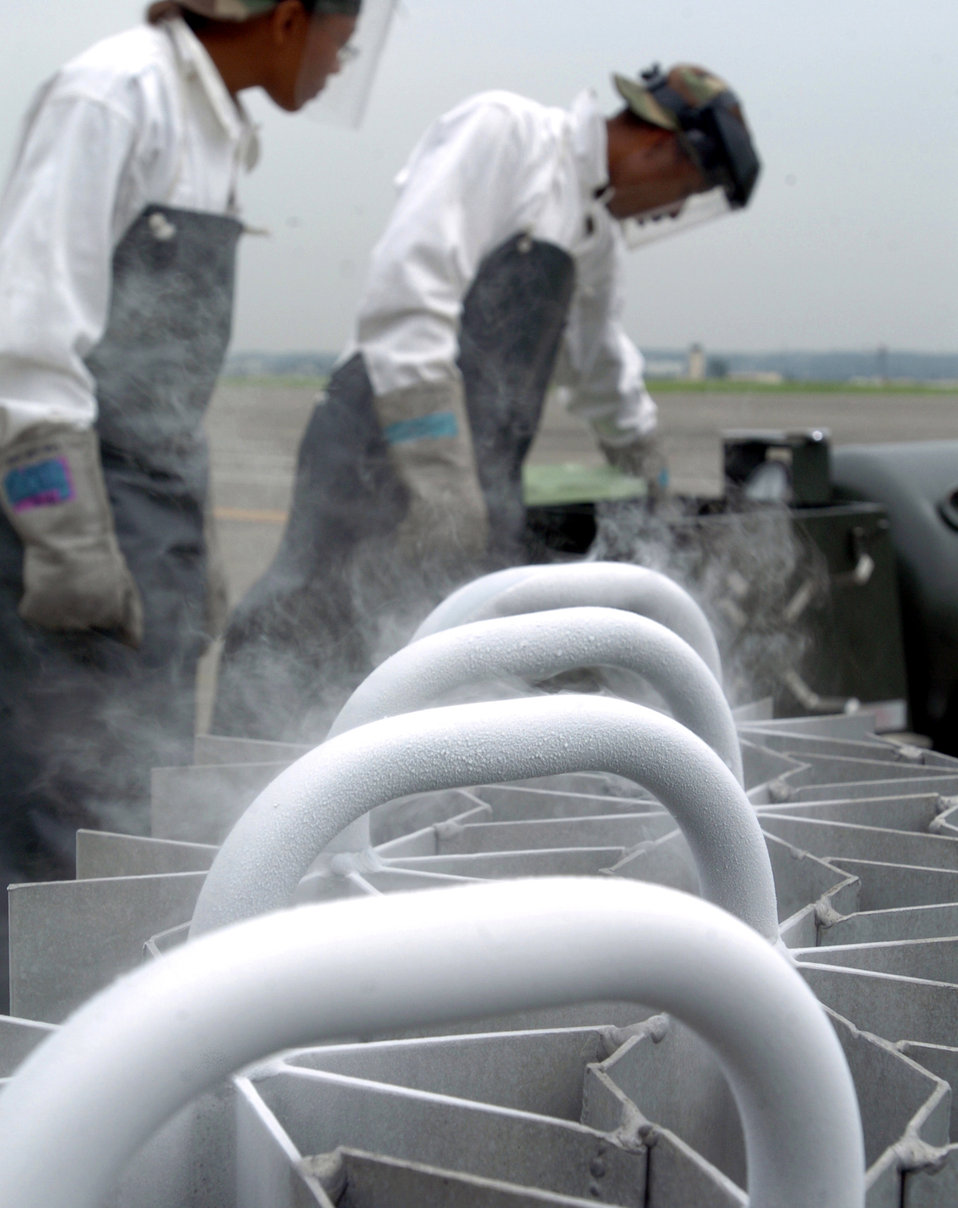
A draining task

YOKOTA AIR BASE, Japan -- The coils of a heat exchanger freeze while Airman 1st Class Andrea Jones (left) and Senior Airman Garry King drain a liquid oxygen cart to test the heat exchanger for serviceability. Technicians with the 374th Maintenance Squadron here inspect, calibrate, repair and maintain cryogenic/compressed gas units.